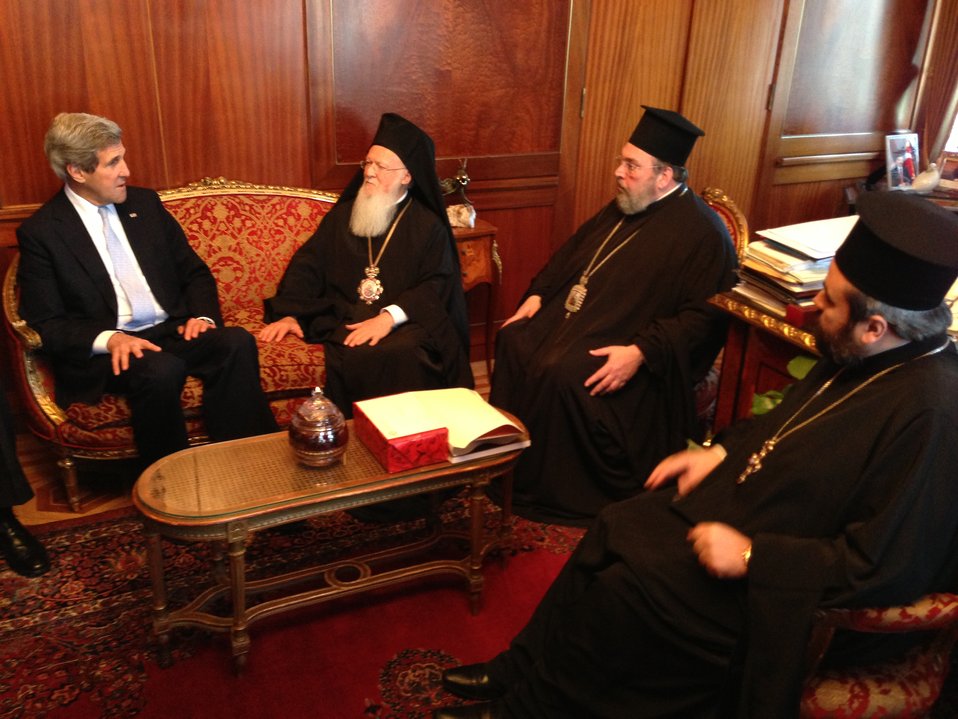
Secretary Kerry Meets With His All Holiness Bartholomew and Other Church Leaders

U.S. Secretary of State John Kerry meets with Ecumenical Patriarch of Constantinople, His All Holiness Bartholomew, and other church leaders in Istanbul, Turkey on April 21, 2013.